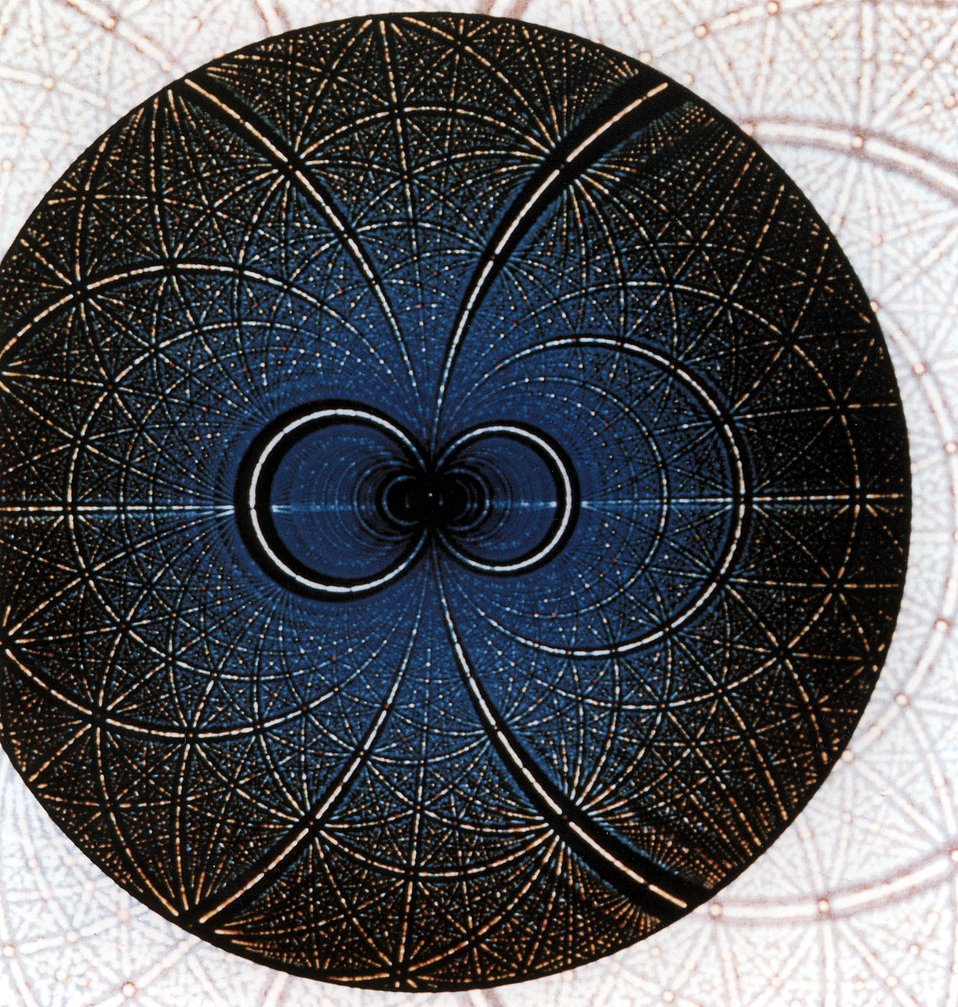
Molecular Snapshots. Laue diffraction experiments use a wide and continuous spectrum of wavelengths from a synchrotron radiation source -- the x-ray analogue of 'white light.' Shown here is a computer simulation of a Laue pattern for the enzyme glycogen phosphorylase.